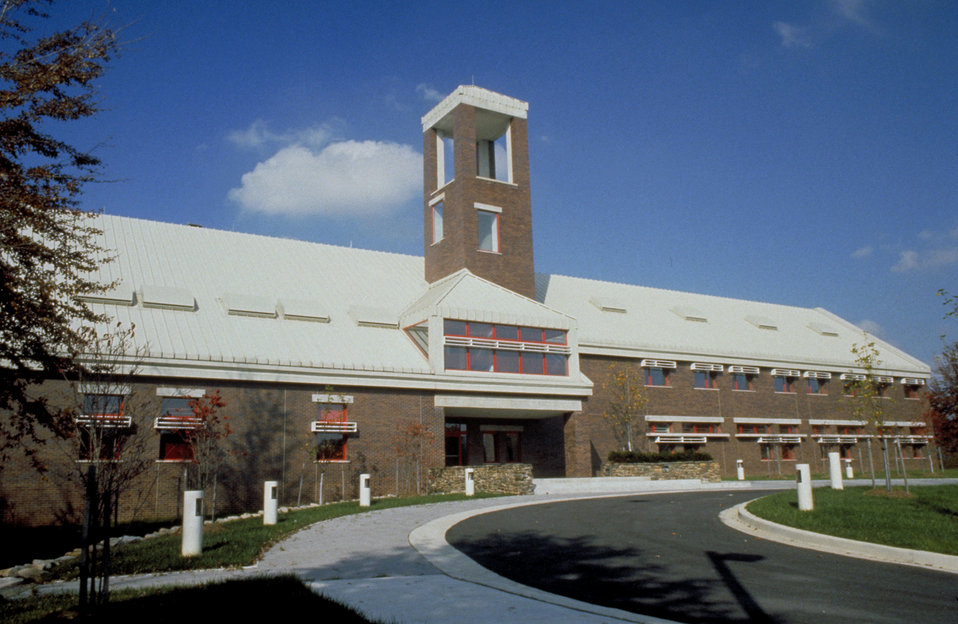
Institute for Bioscience and Biotechnology Research (IBBR)

The Institute for Bioscience and Biotechnology Research (IBBR) near Gaithersburg, Md., a collaboration of the University of Maryland and NIST, is celebrating its 25th anniversary this year.